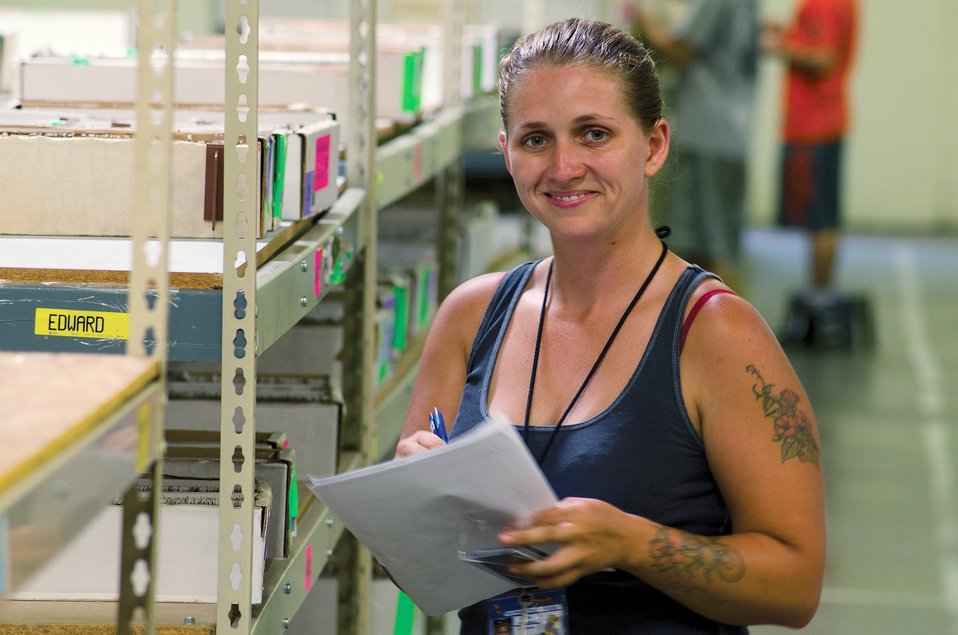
A worker at Troll&Toad.com, an online retailer of games, fills orders at the company's new headquarters in Corbin, Ky.
John Huston created the business in his home in 1993 selling only one type of game. The business is now located a one
million square-foot building that used to house an American Greetings production facility. With a growth rate of 299 percent in the past three years, the company placed No. 51 in the retail sector in the 2010 INC MagazineÆs list of the 5000 fastest growing companies in the nation. That growth was assisted by Rural DevelopmentÆs Business and Industry Guaranteed Loan Program. The company received $4.9 million to finance the building purchase and expansion.